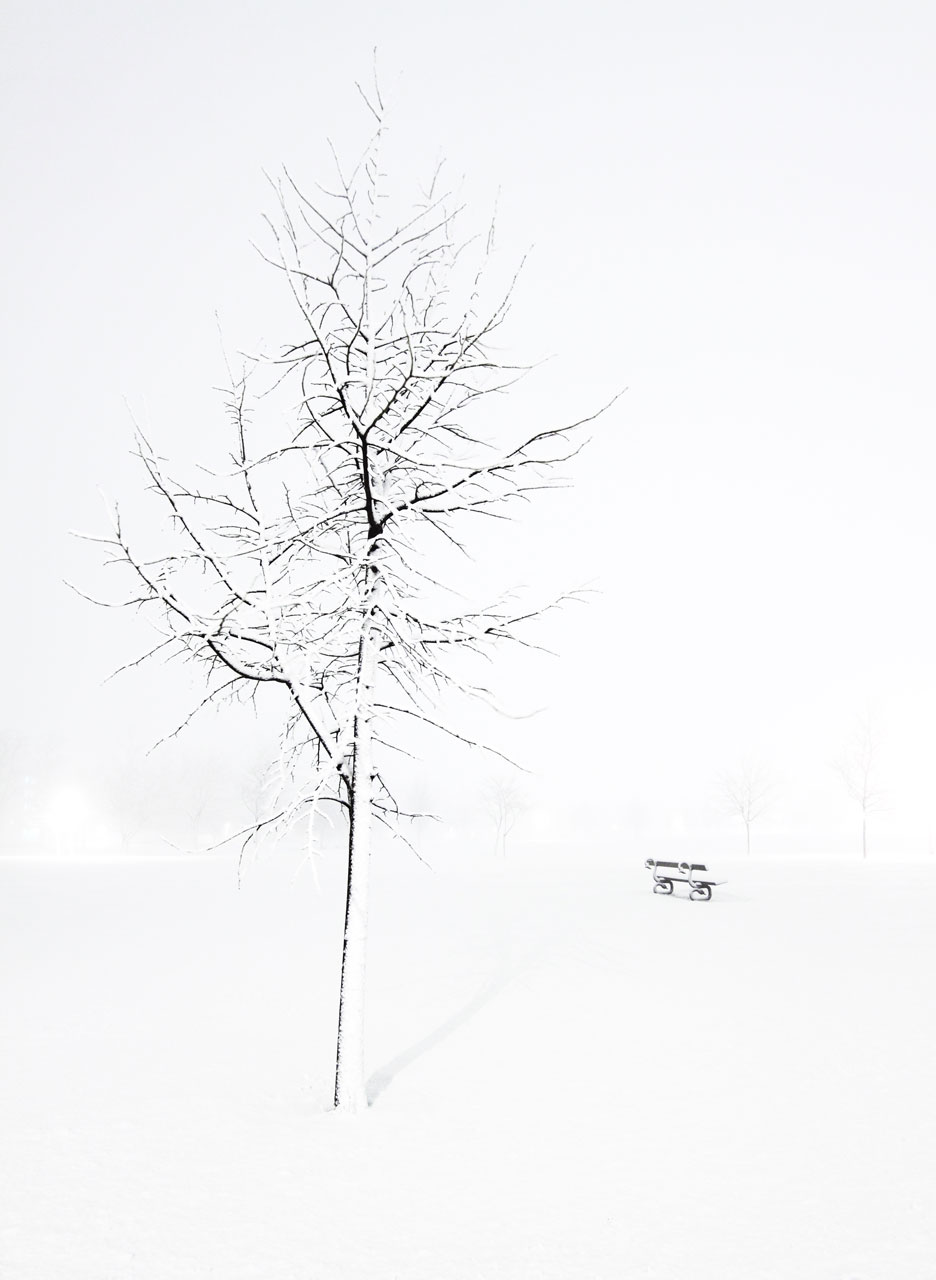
Winter

A tree and and a bench covered with snow.